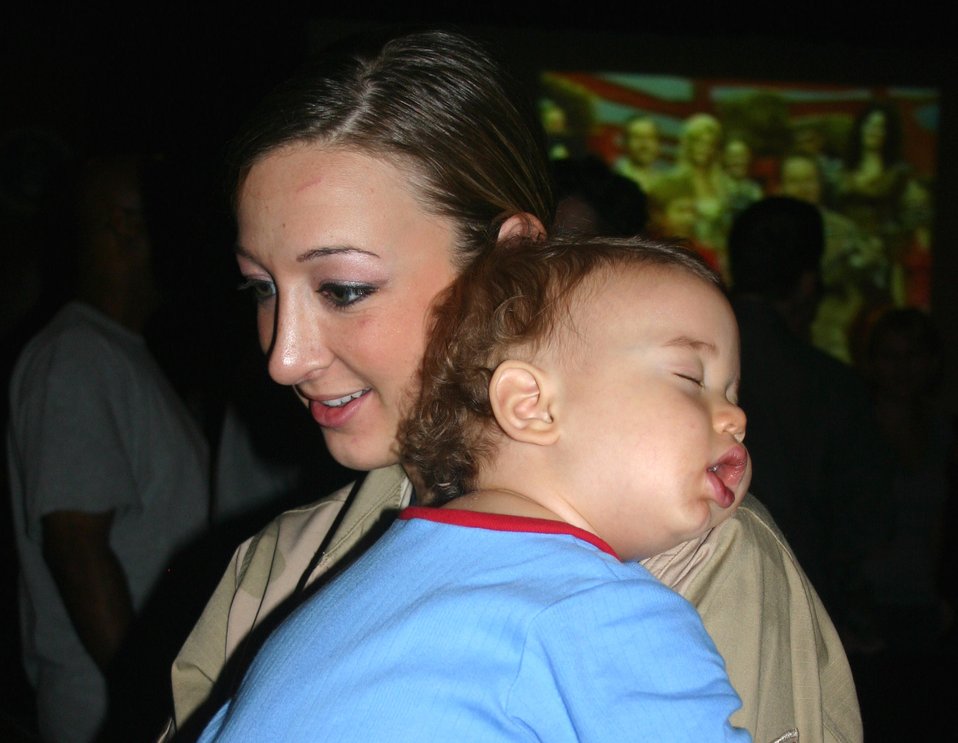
Lackland medics keep steady deployment pace

Staff Sgt. Marisa Burri holds her sleeping son, Xavier, as she visits with her family before leaving on deployment to Balad Air Base, Iraq, in September. Approximately 100 Airmen from the 59th Medical Wing at Lackland Air Force Base, Texas, deployed in support of operations Enduring Freedom and Iraqi Freedom. Sergeant Burri is assigned to the 59th Surgical Operations Squadron.